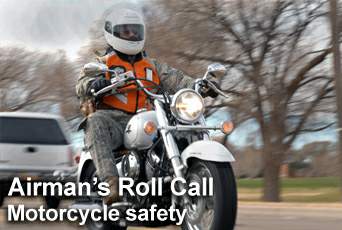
Airman's Roll Call: Motorcycle safety

This week's Airman's Roll Call focuses on the spring spike focus. Research conducted by the Air Force Safety Center has shown motorcycle mishaps double in the springtime.